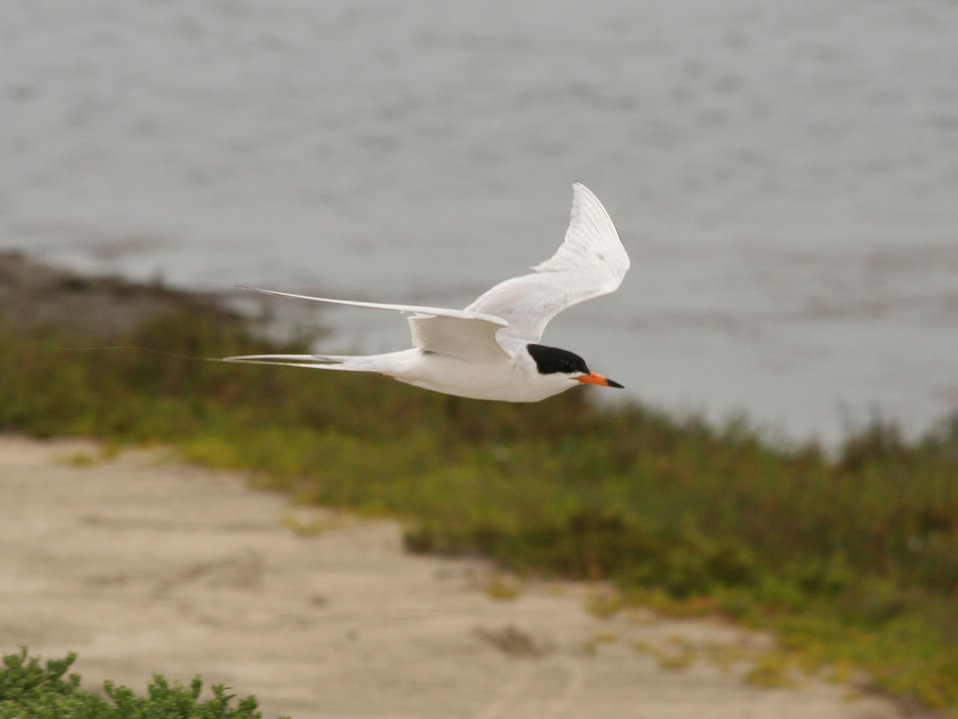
California least tern

Shot at bolsa chica ecological reserve, huntington beach, ca..